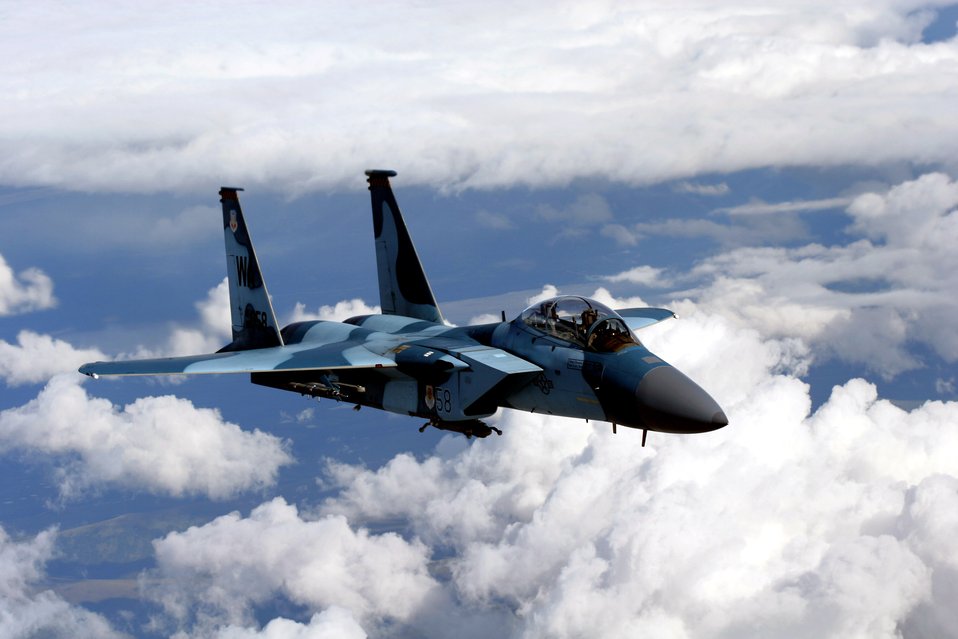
Aggressor at Red Flag Alaska

An F-15C Aggressor from the 65th Aggressor Squadron at Nellis Air Force Base, Nev., flies over a mountain range on a refueling mission at Red Flag-Alaska July 25. Red Flag-Alaska enables aviation units to sharpen their combat skills by flying simulated combat sorties in a realistic threat environment. More than 80 aircraft and 1,500 servicemembers from six countries are participating in the exercise July 12 to 27.